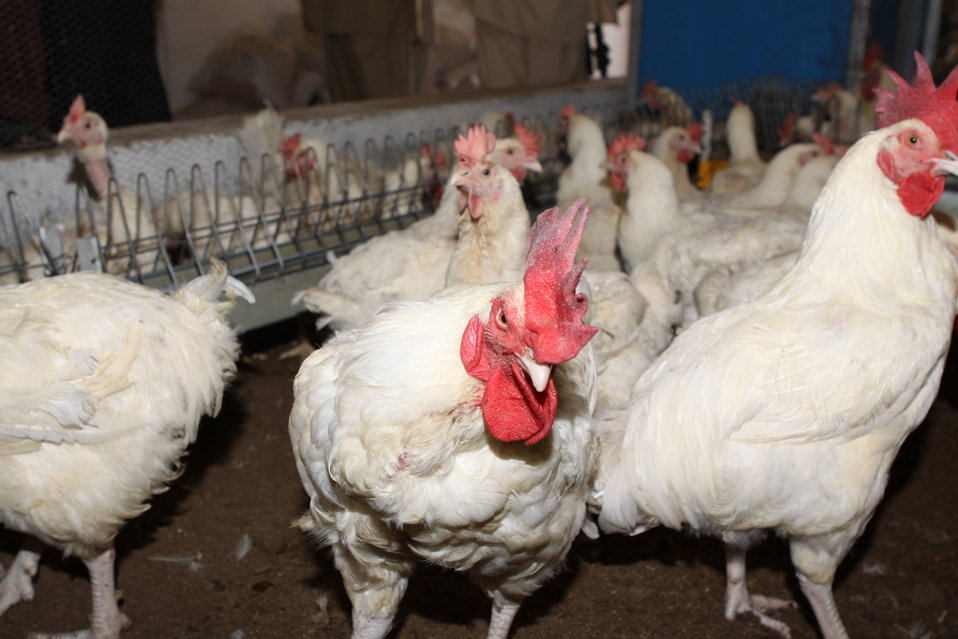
Bolan Poultry Farm